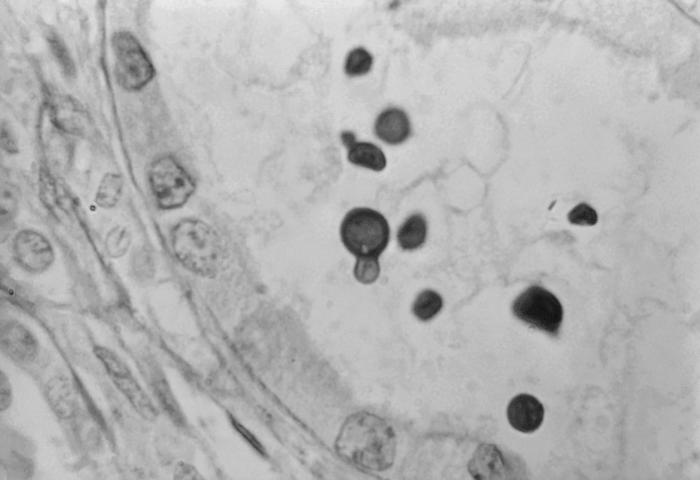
Magnified 980X, this photomicrograph depicted numbers of Cryptococcus neoformans fungi, the etiologic agents responsible for the disease 'cryptococcosis'. This slide was created from a liver specimen, and stained using the periodic acid-Schiff staining technique.